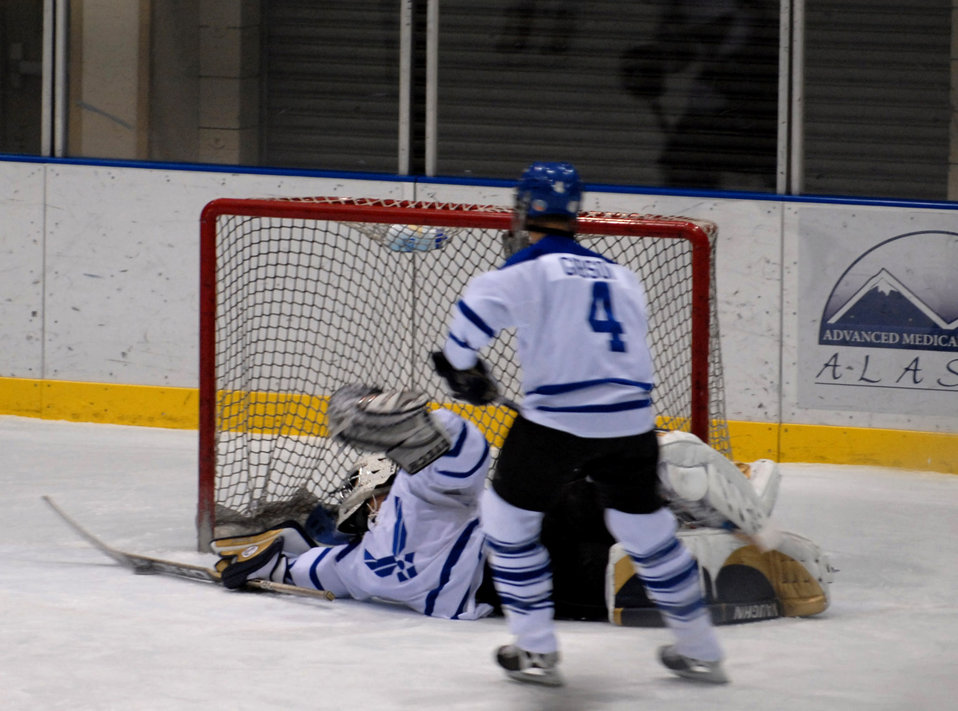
Rumble on the rink

Chris Schaffer of the Eielson Air Force Base Icemen blocks the puck from going into the goal Jan. 13 at the Big Dipper Ice Arena in Fairbanks, Alaska. Eielson Icemen from Eielson Air Force Base, Alaska, faced off against the Fort Wainwright Grizzlies in the 11th Annual Interior Alaska Armed Forces Ice Hockey Commander's Cup Game. Eielson Icemen went on to win the game 8 to 6.